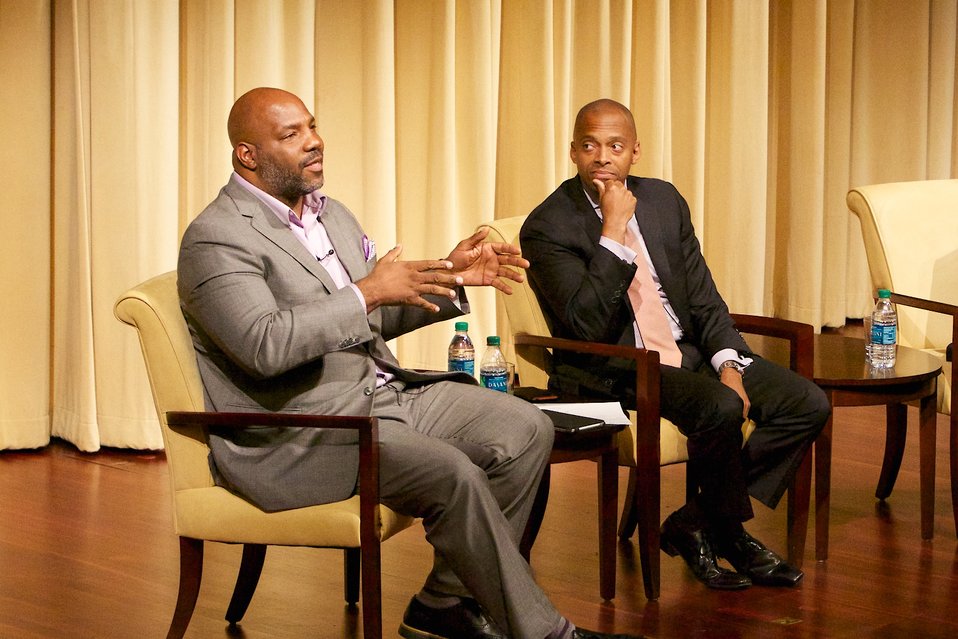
Solomon Northup's Odyssey